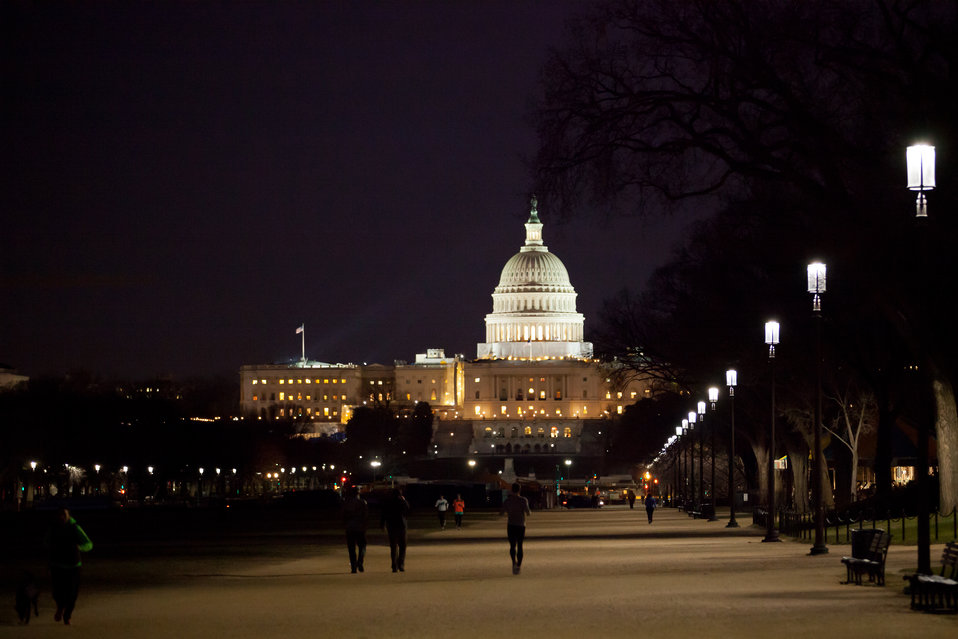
Tourists and Joggers underneath the new lighting, with the Capitol Building in the background.